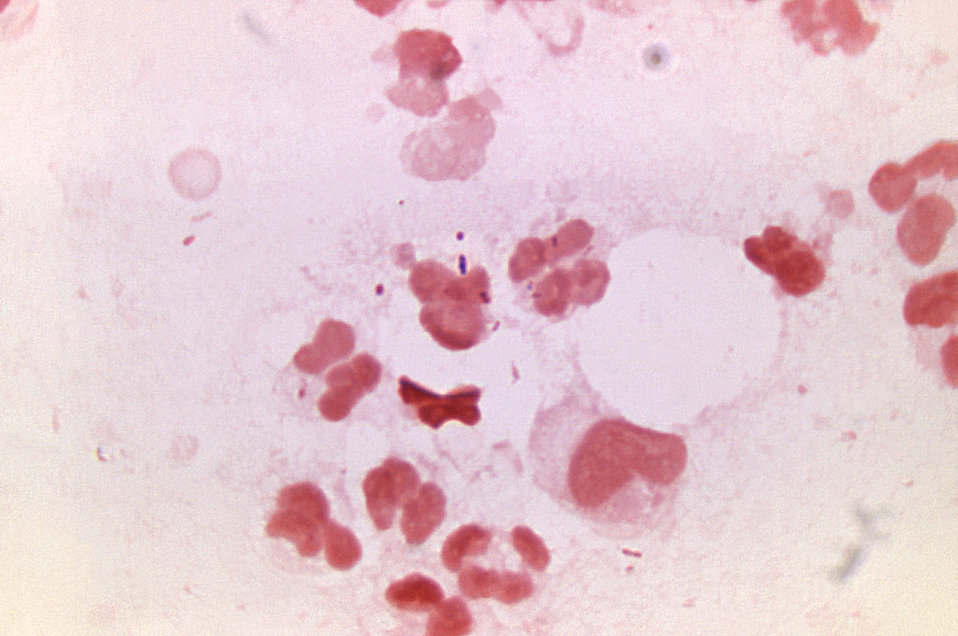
A photomicrograph from a bacterial study of a patient with 'nonspecific' urethritis; Magnified 1125X.